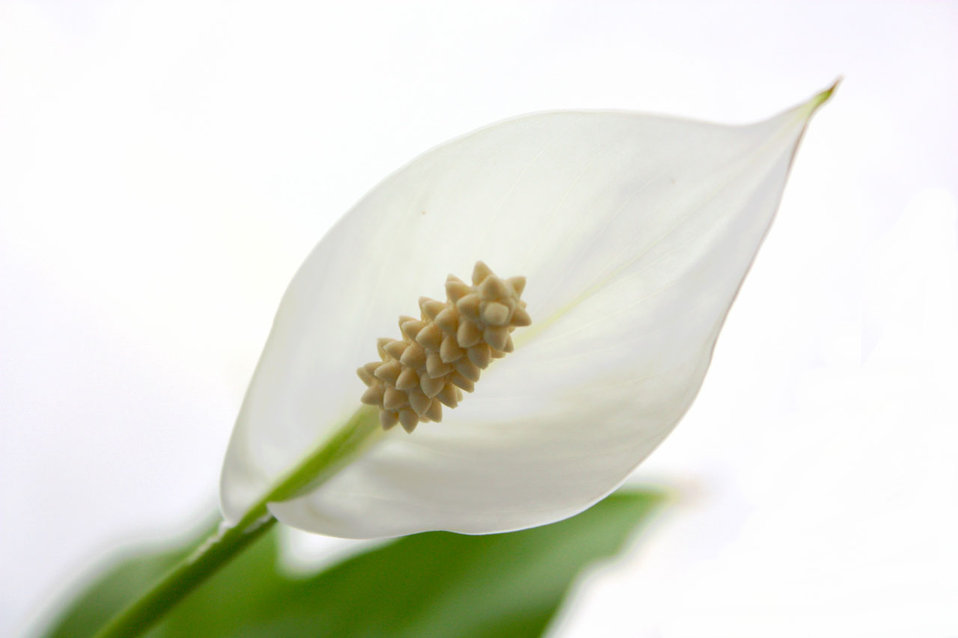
Calla flower on white background.